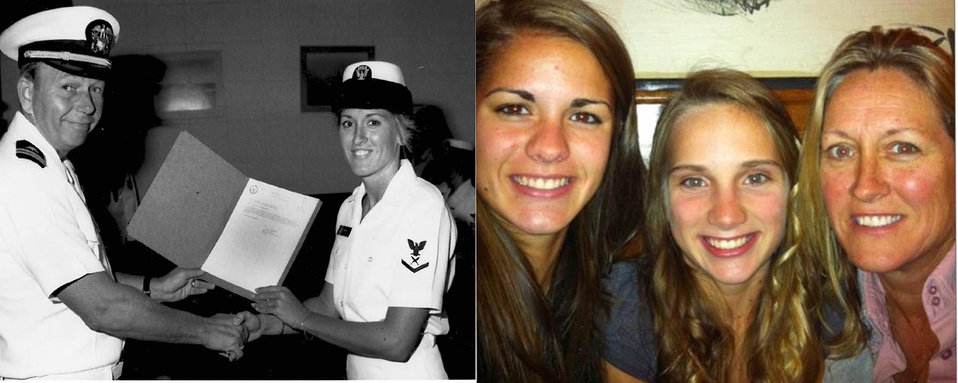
Teresa Ward.
(Left) Teresa Ward recieving promotion to E-5 (petty officer Second Class) in CINPAC Fleet at Pearl Harbor 1984. (right photo ) Daughters Kristin and Cassie with Teresa Ward, USFWS..
Teresa Gillis Ward entered the U.S. Navy in May 1983. During her military career she was assigned to U.S. Commander in Chief in Pearl Harbor, Hawaii; VF-126 in Miramar, California; U.S. Southern Command in the Panama Canal Zone; and U.S. Central Command, MacDill AFB, Florida. She performed these duties during Operation “Just Cause” and Operations “Desert Shield and Desert Storm.” She separated from the Navy as a Yeoman First Class (E6) in October 1997. .
.
She then followed her husband’s Navy career for ten more years assigned to Connecticut, Mississippi and lastly Athens, GA. She entered government service as an Accounting Technician at the Naval Training Center in Groton, CT; Military Personnel Clerk at Keesler AFB and Executive Assistant at Pascagoula, MS, before assuming her current duties as Administrative Specialist for the U.S. Fish and Wildlife Ecological Services Regional Office in Atlanta. .
.
Gillis-Ward’s professional awards included the Defense Meritorious Service Medal, one Joint Service Achievement Medal, four Navy and Marine Corps Achievement medals, the National Defense Service Medal, the Joint Meritorious Unit Award, two Overseas Service Ribbons, and three Good Conduct Awards.